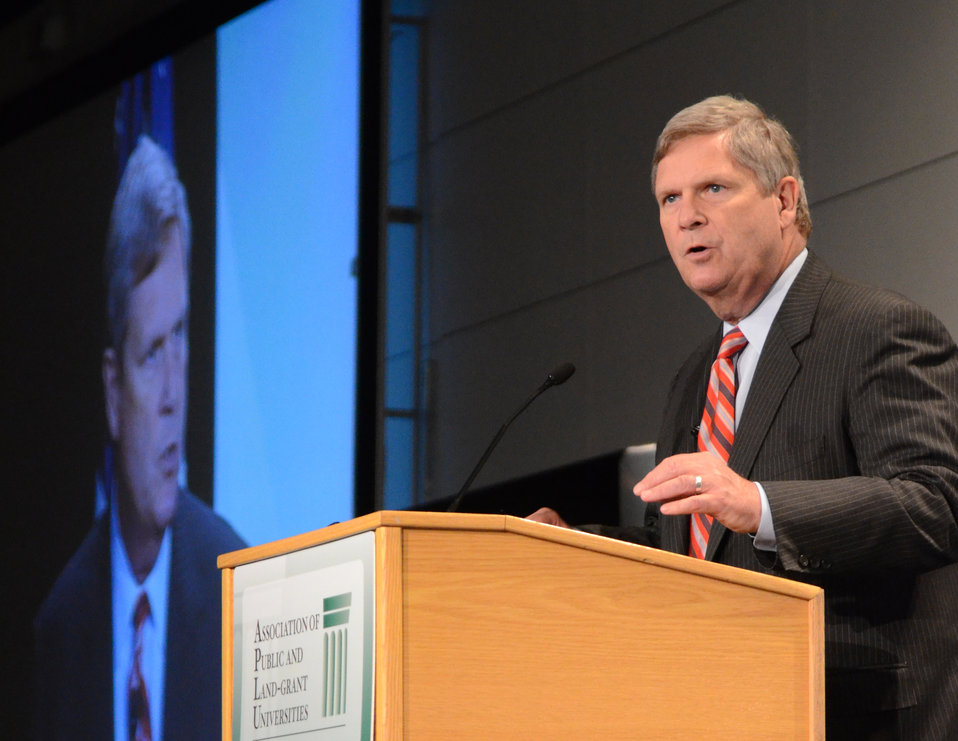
Agriculture Secretary Tom Vilsack speaks at the Association of Land-Grant Universities (APLU) 150th Year Anniversary of the Morrill Act: Advancing the Legacy at the Ronald Reagan Building and International Trade Center in Washington D.C. on Tuesday, June 26, 2012.